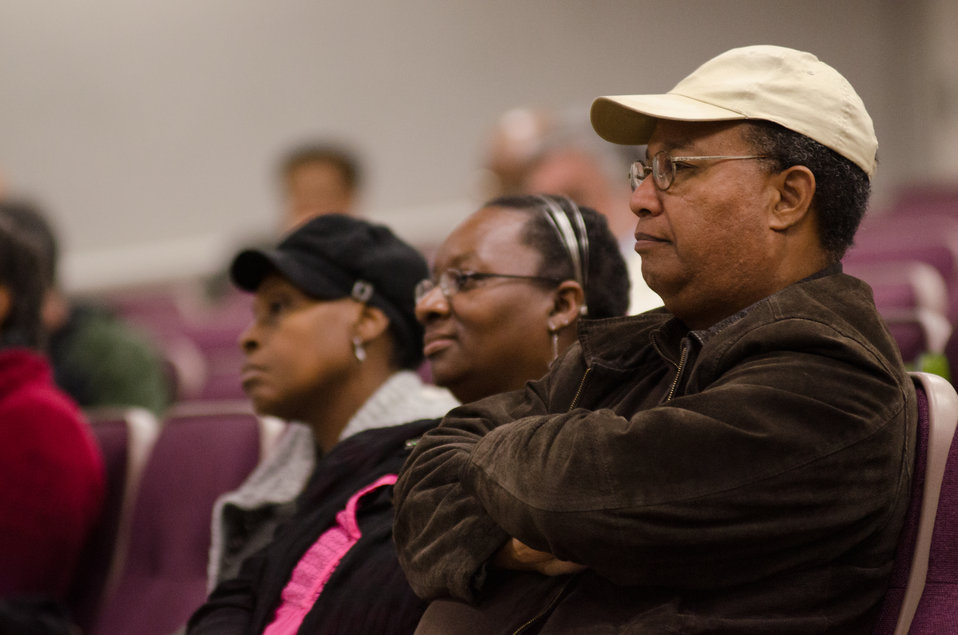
Farmers listened, questioned, took notes and gained a better understanding of resources available to them, at the “Virginia State University (VSU), U.S. Department of Agriculture (USDA) and Virginia Farmers Working Together” outreach workshop in the VSU, L. Douglas Wilder building on Thursday, March 7, 2013, in Petersburg, VA. Farmers shared and learned new ways to produce more and conduct better practices and planning of their family agriculture businesses.